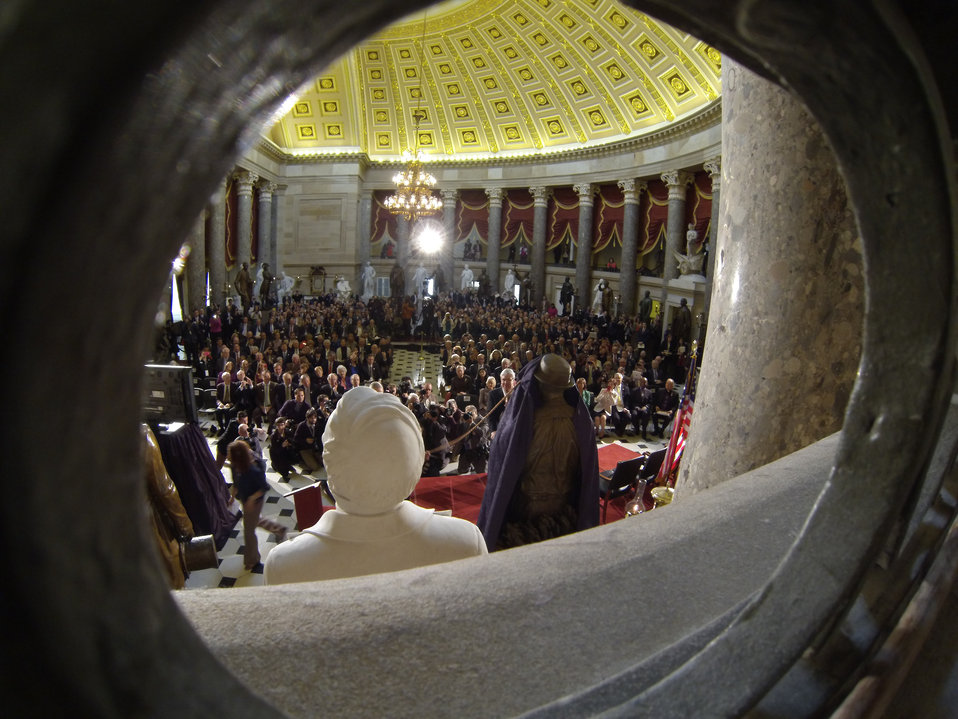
The Dr. Norman E. Borlaug statue is unveiled in the National Statuary Hall at the U. S. Capitol in Washington, D.C. on Tuesday, Mar. 25, 2014. Seen in front of statue is Mr. Bill Borlaug (son of Dr. Borlaug). Also unveiling the statue is Minority Leader of the House of Representatives Nancy Pelosi, Agriculture Secretary Tom Vilsack, Speaker of the House of Representatives John Boehner, Iowa Governor Terry Branstad and Majority Leader of the U.S. Senate Harry Reid. Today commemorates 100 years since Dr. Borlaug’s birth. Through his scientific and humanitarian achievements, Nobel Laureate Dr. Norman E. Borlaug (1914-2009) has been credited with saving millions of people from starvation in developing countries. His collaborative work with scientists in Mexico on a high-yielding, disease resistant dwarf wheat sparked the Green Revolution of the 1960s. The National Statuary Hall Collection in the U.S. Capitol is composed of statues donated by individual states to honor persons notable in their history.